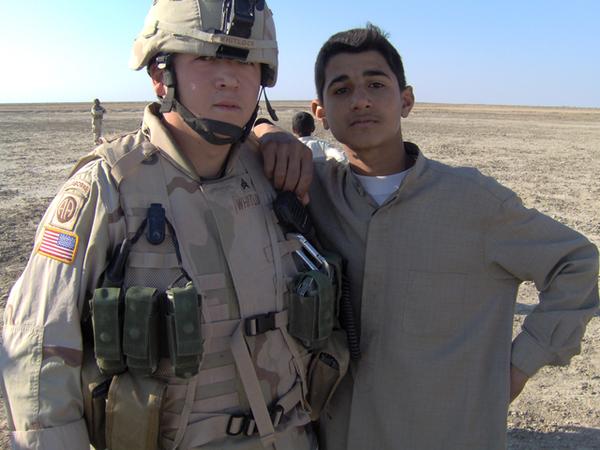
User Badmilk's personal user page photo